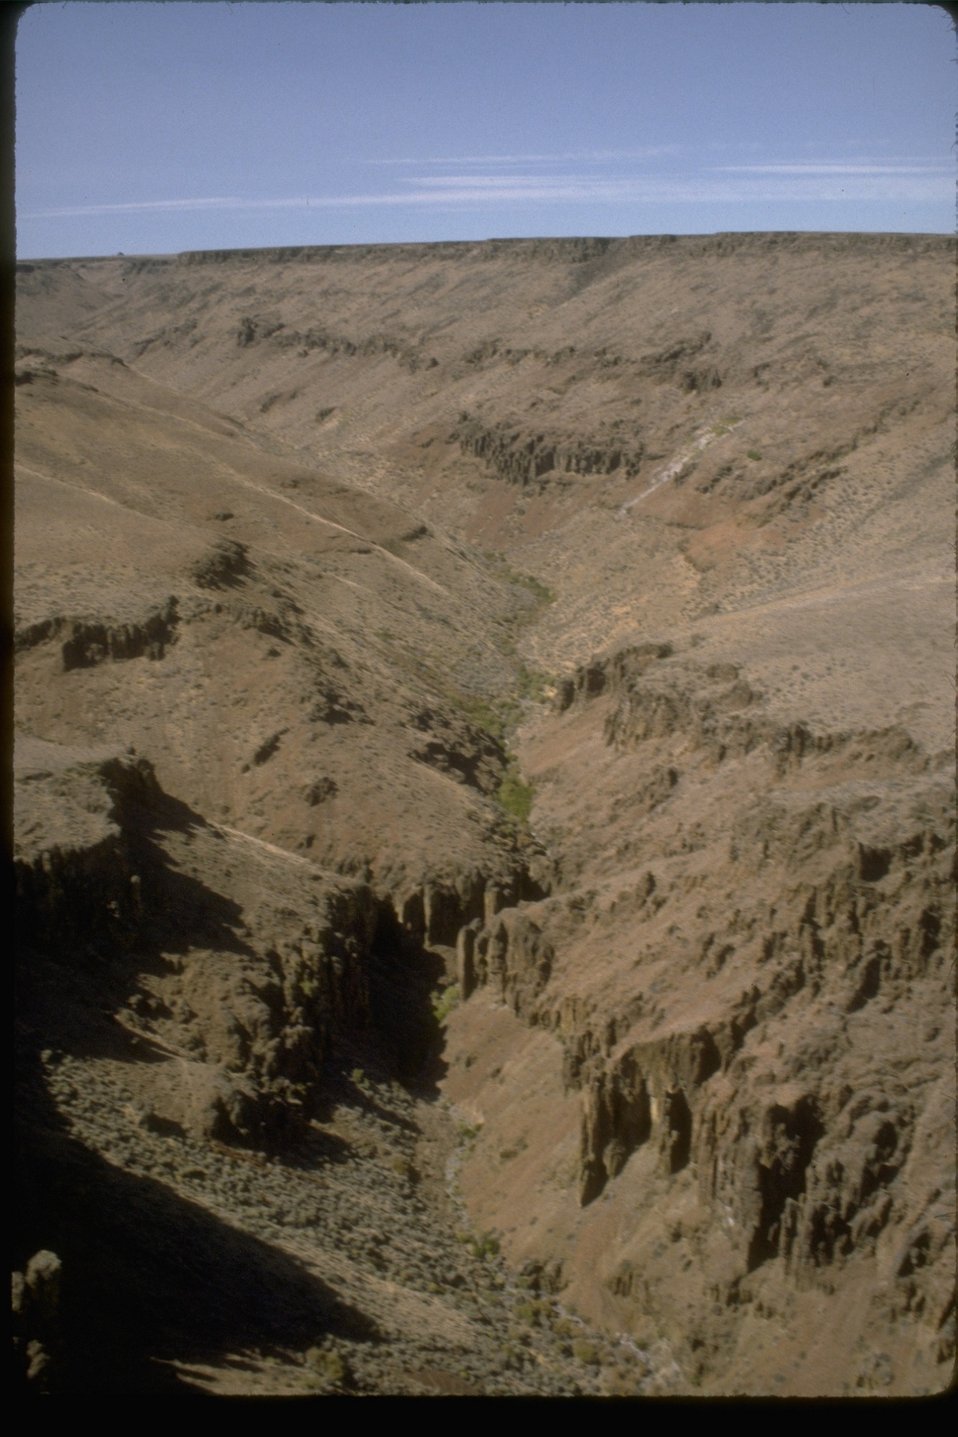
Wildcat Canyon in the Cottonwood Creek Wilderness Study Area. OR 3-32